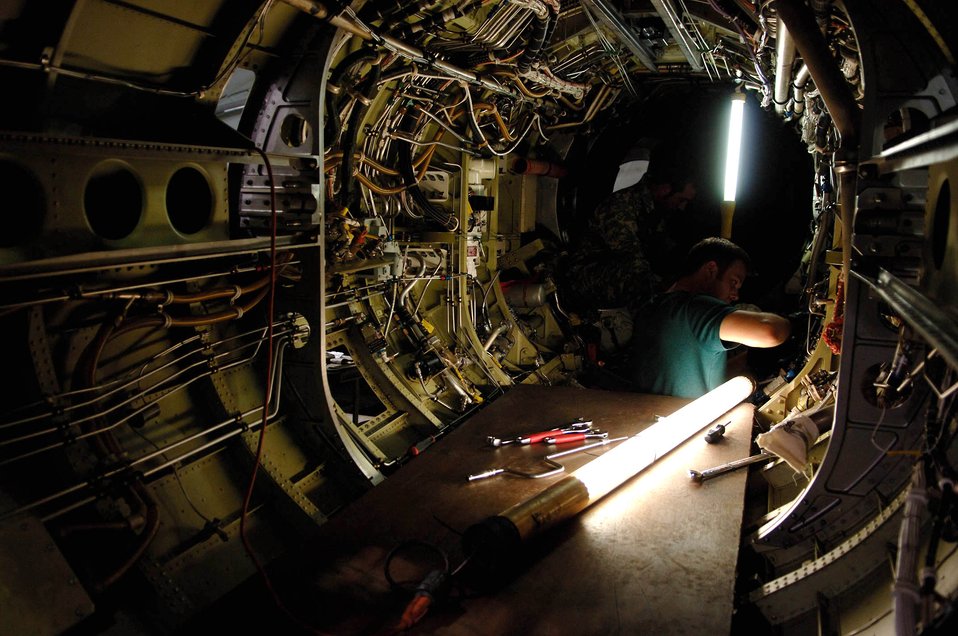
They only have eyes for U-2

Jeff Knutson conducts phase maintenance on a U-2 May 23 at a Southwest Asian air base. Mr. Knutson is a 380th Expeditionary Aircraft Maintenance Squadron phase dock crew member.